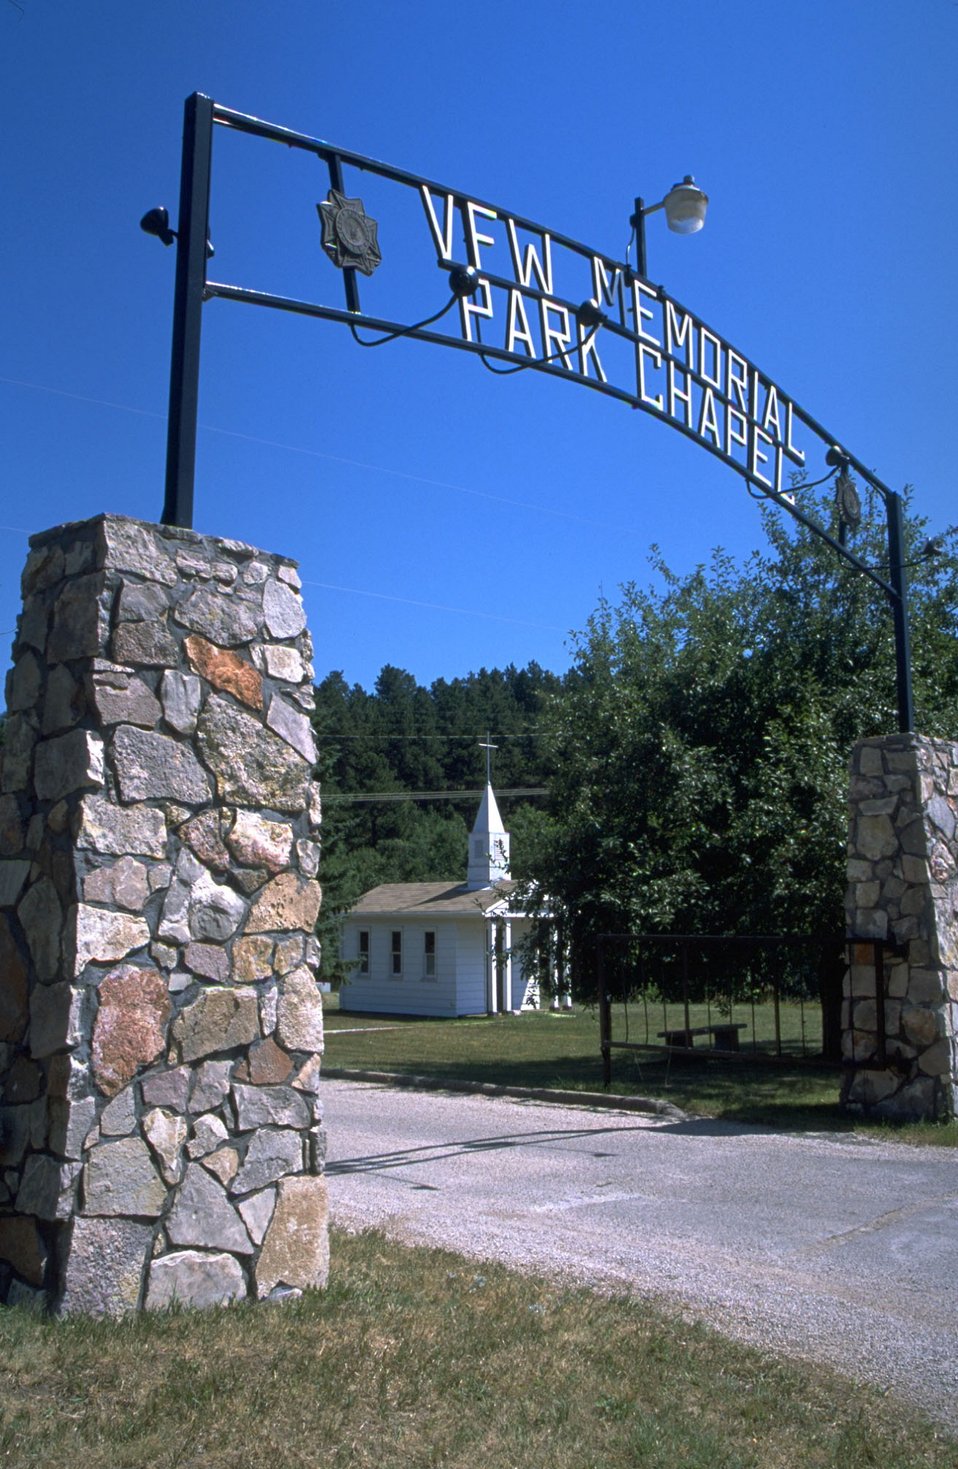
VFW Memorial Chapel entry arch in Fort Meade South Dakota (vertical)